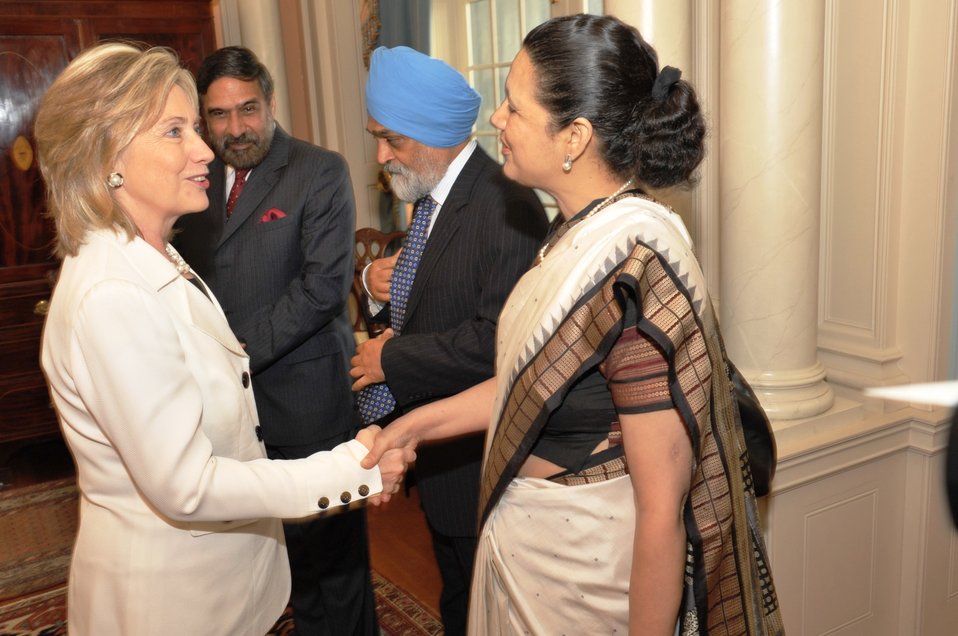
Secretary Clinton Shakes Hands With Indian Ambassador to the U.S. Shankar

U.S. Secretary of State Hillary Rodham Clinton shakes hands with Indian Ambassador to the U.S. Meera Shankar at the U.S. Department of State in Washington, D.C., on June 22, 2010.